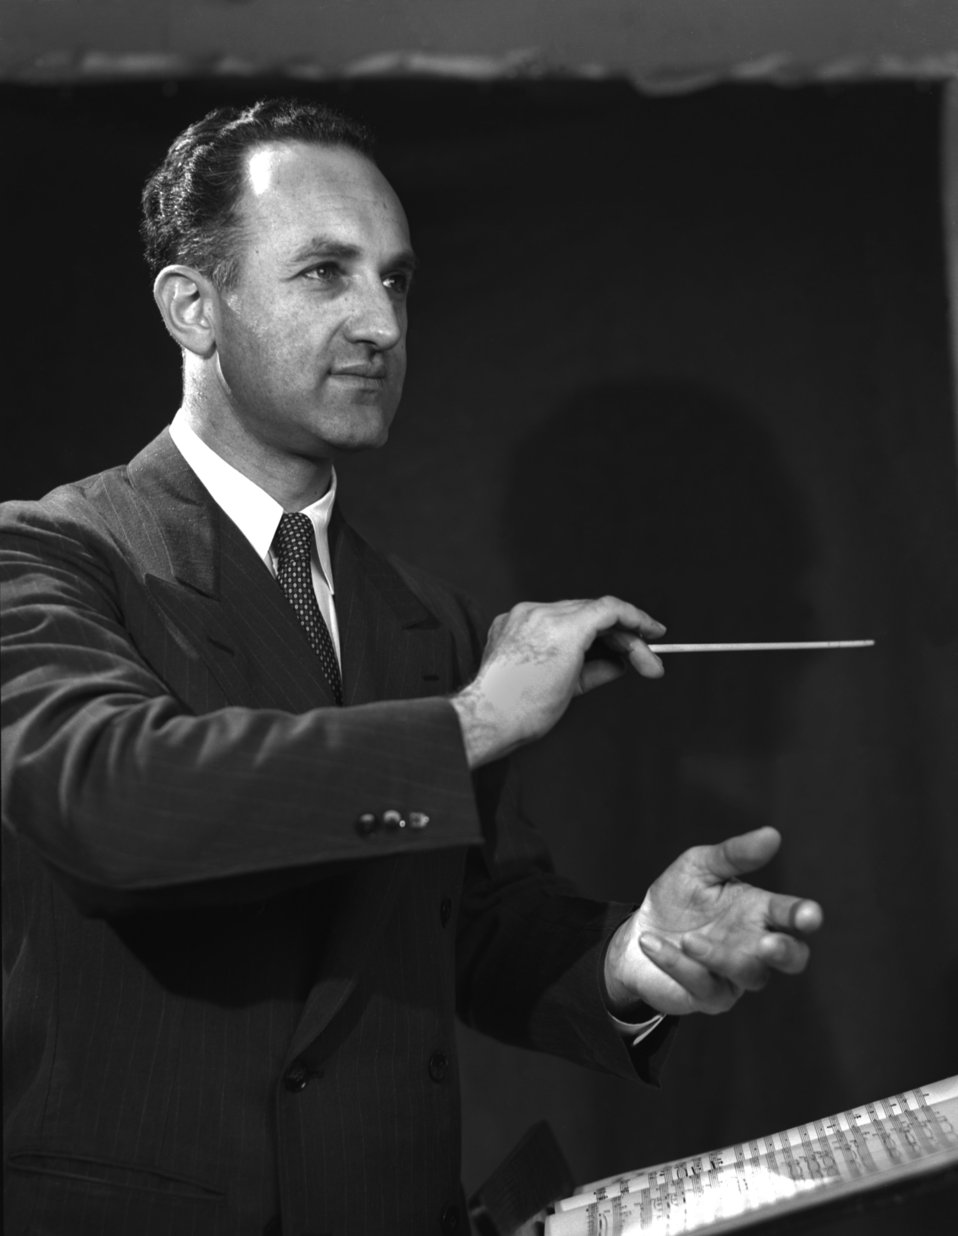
Dr. Waldo Cohn Biochemist/Conductor Oak Ridge

3267-14 DOE photo Ed Westcott 1-24-1947 Oak Ridge Tennessee